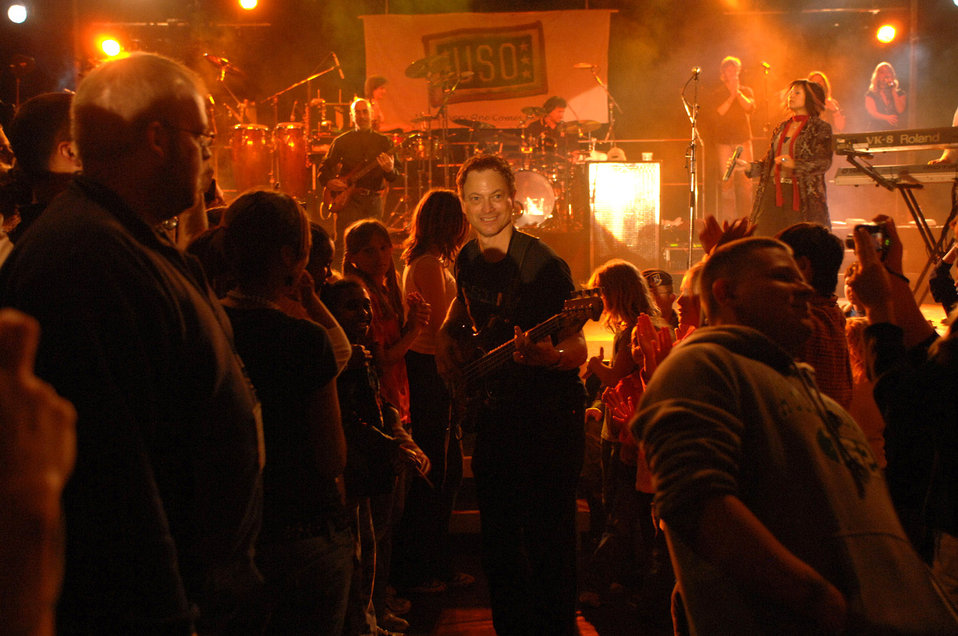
Lt. Dan Band salutes servicemembers overseas

Gary Sinise enters the crowd as the Lt. Dan Band performs at Spangdahlem Air Base, Germany, May 15 to a crowd of more than 650 attendees. The band is just wrapping up its 2007 European tour. They played five United Service Organization, or USO, shows throughout Belgium and Germany.